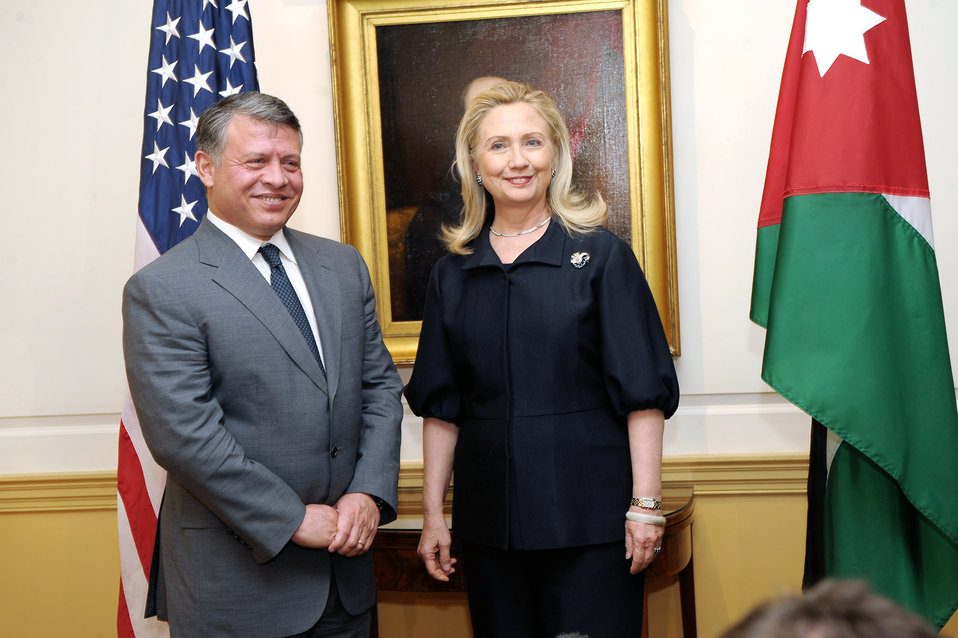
Secretary Clinton Meets With King Abdullah II of Jordan

U.S. Secretary of State Hillary Rodham Clinton meets with King Abdullah II of Jordan at the U.S. Department of State in Washington, D.C., on January 18, 2012.